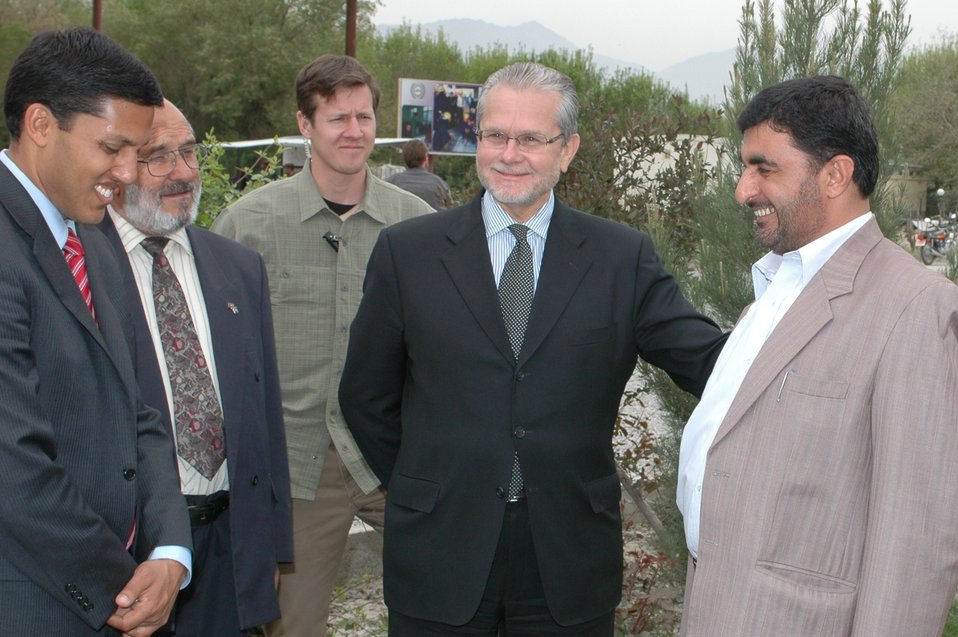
Dr Shah Visits Votech in Kabul